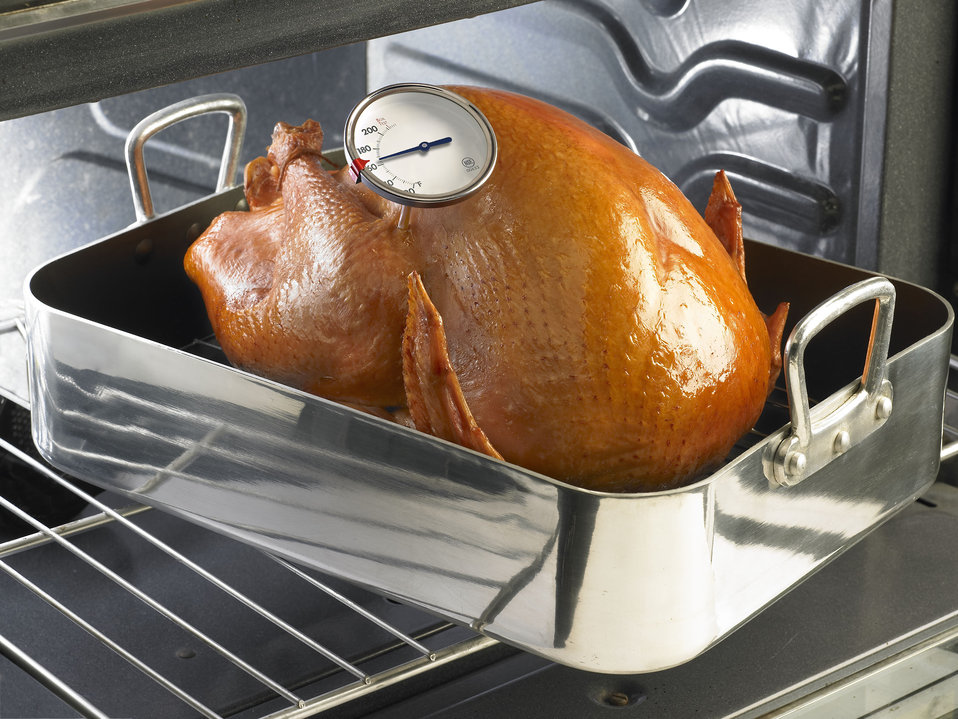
Roasting is one of the best methods for cooking tender meats. The U.S. Department of Agriculture (USDA) recommends cooking meat and poultry at a minimum of 325 degrees. The Food Safety Inspection Service (FSIS) recommends an internal cooked temperature of 165 to 180 degrees. The food thermometer depicted here is designed to remain in the food while it is cooking in the oven, and is generally used for large items such as a roast or turkey.